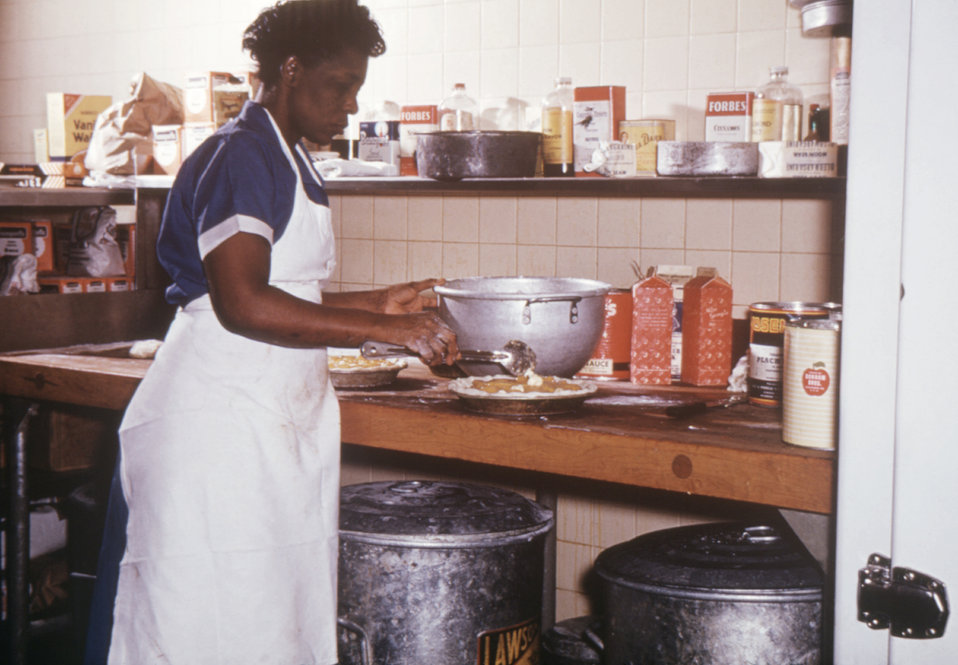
This photograph shows how to properly handle food during its preparation while using a minimum of hand-to-food contact.